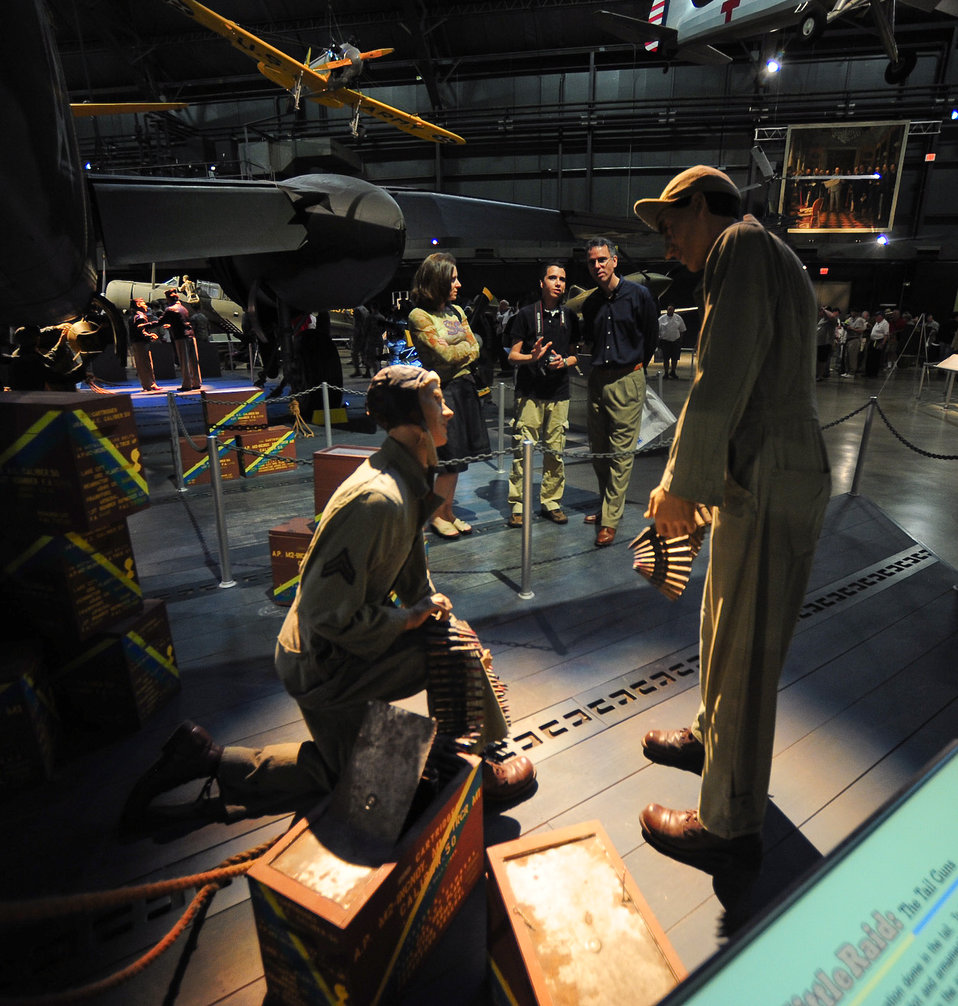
68th Doolittle Raiders Reunion

Doolittle Raiders diorama at the National Museum of the U.S. Air Force, Wright Patterson Air Force Base, Ohio, April 16, 2010.